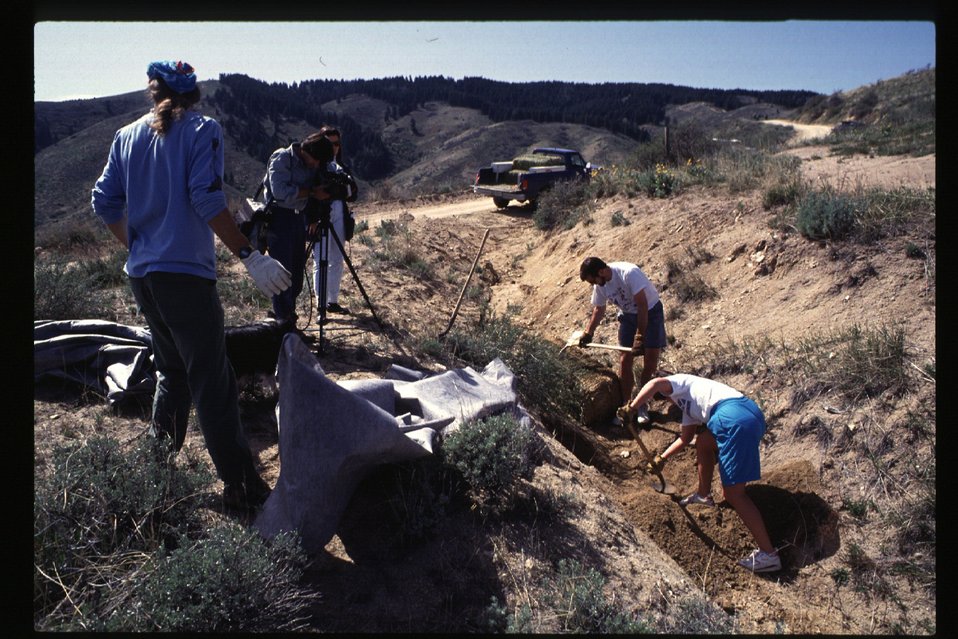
Rangeland and environmental education Boise Front Tending our Foothills Media Coverage Straw bale check dams Four Rivers Field Office LSRD Lower Snake River District